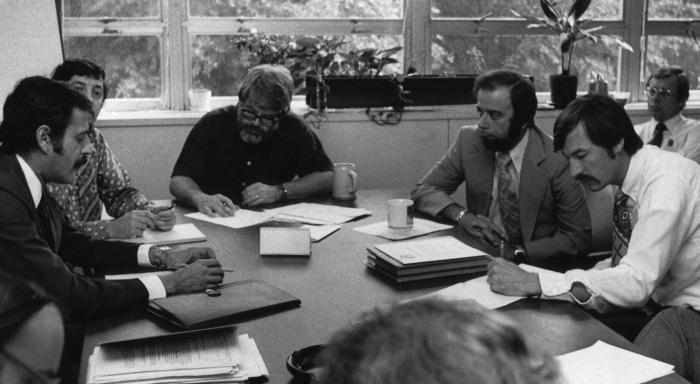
This 1976 photograph showed a meeting of a Centers for Disease Control task force. Such meetings gathered health officials who would collaborate on the latest public health concern.